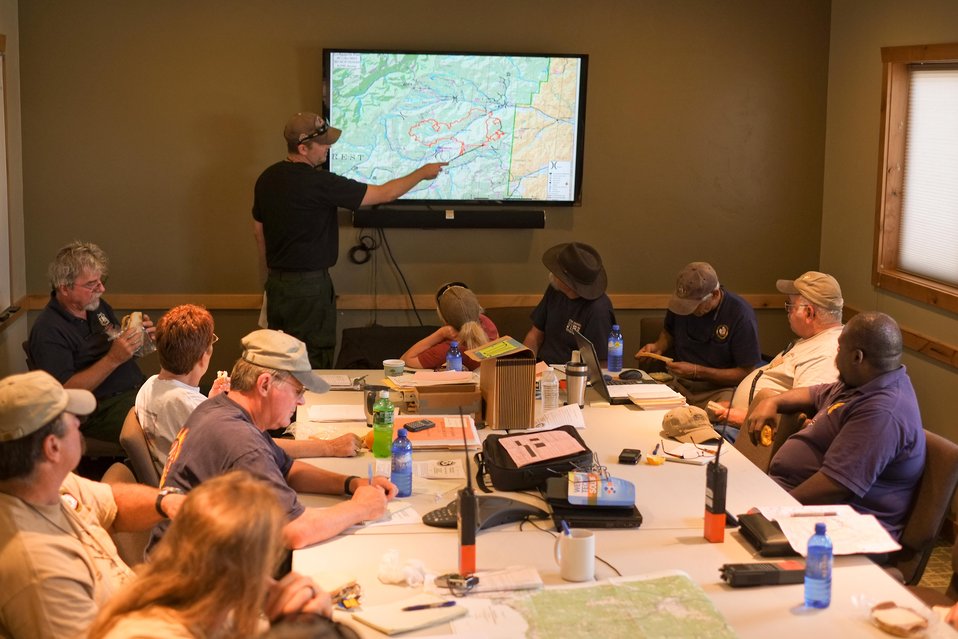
Morning briefing discusses fires operations on the Lodgepole Fire. The Lodgepole Fire in the Salmon-Challis National Forest near Challis, ID began on Jul. 20, 2013 by lightning has consumed approximately 20,325 acres and is approximately 40% contained.